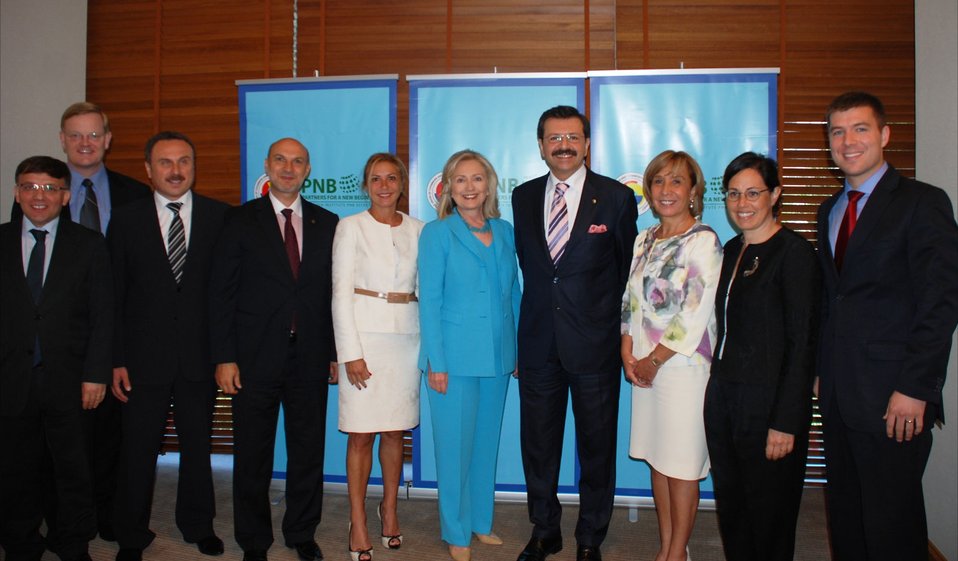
Secretary Clinton Poses for a Photo With Partners for a New Beginning Initiative Meeting Participants

U.S. Secretary of State Hillary Rodham Clinton poses for a photo with participants in the Partners for a New Beginning (PNB) Initiative meeting, including Hasan Sert, All Industrialists' and Businessmen's Association (TUMSIAD); Ömer Cihad Vardan, President of the Independent Industrialists' and Businessmen's Association (MUSIAD); Ümit Boyner, President of the Turkish Industrialists' and Businessmen's Association (TUSIAD); Rıfat Hisarcıklıoğlu, Chairman of the Union of Chambers and Commodity Exchanges of Turkey (TOBB); Aynur Bektaş, Chairman of the Board of Women Entrepreneurs; Galya Molinas, President of Coca Cola Turkey; in Istanbul, Turkey, on July 16, 2011.